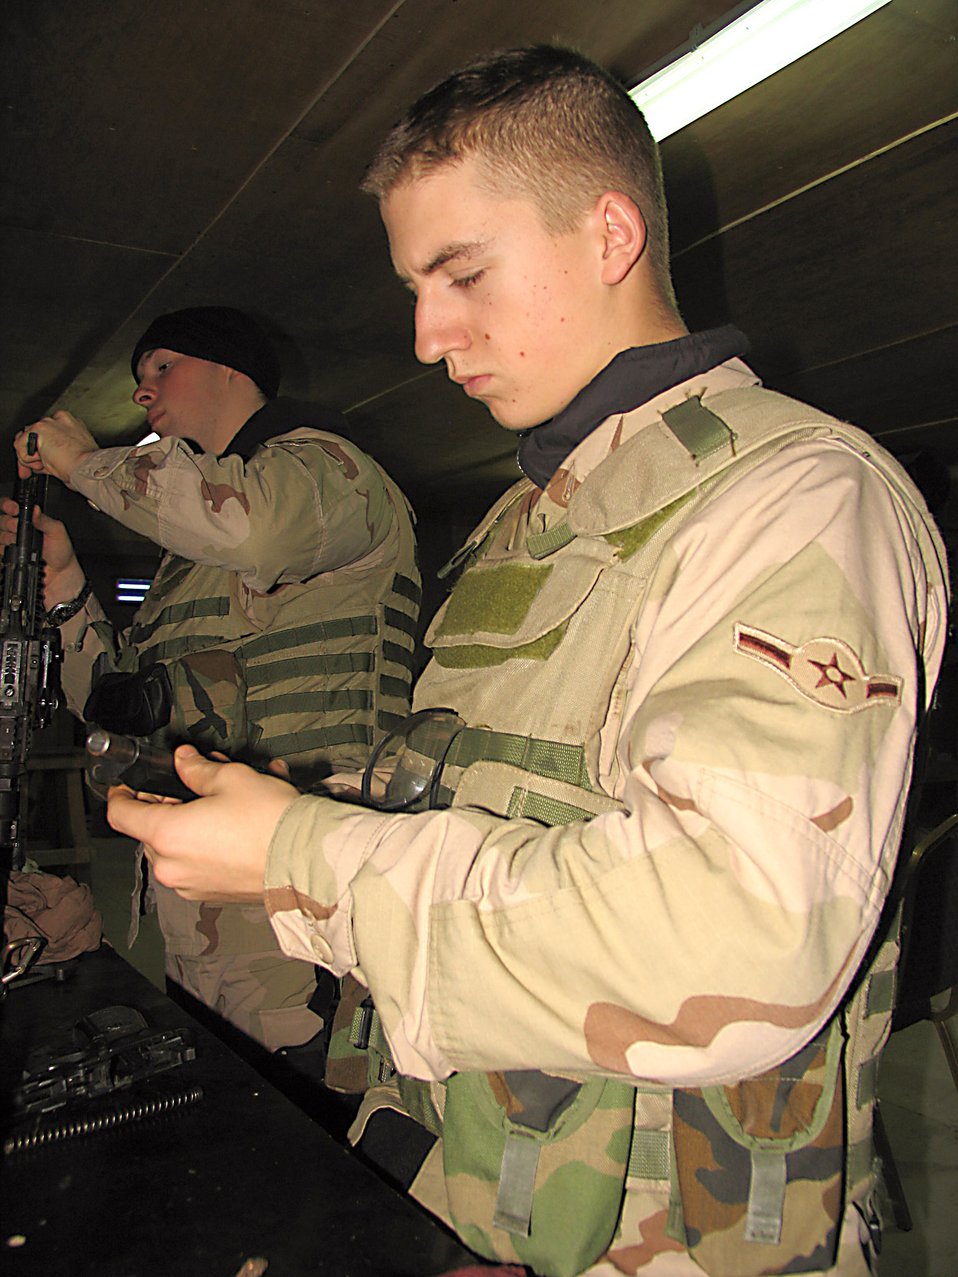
Ellsworth deployed

CAMP BUCCA, Iraq (AFPN) -- Gunner Airman Jason Taylor (front) and Airman 1st Class Lucas King clean their weapons during a shift break. They are part of the more than 300 Airmen of the 586th Expeditionary Security Forces Squadron. The unit provides base, convoy and area security here. The Airmen are deployed from Ellsworth Air Force Base, S.D. Airman Taylor is from Seattle and Airman King is from Painesville, Ohio.